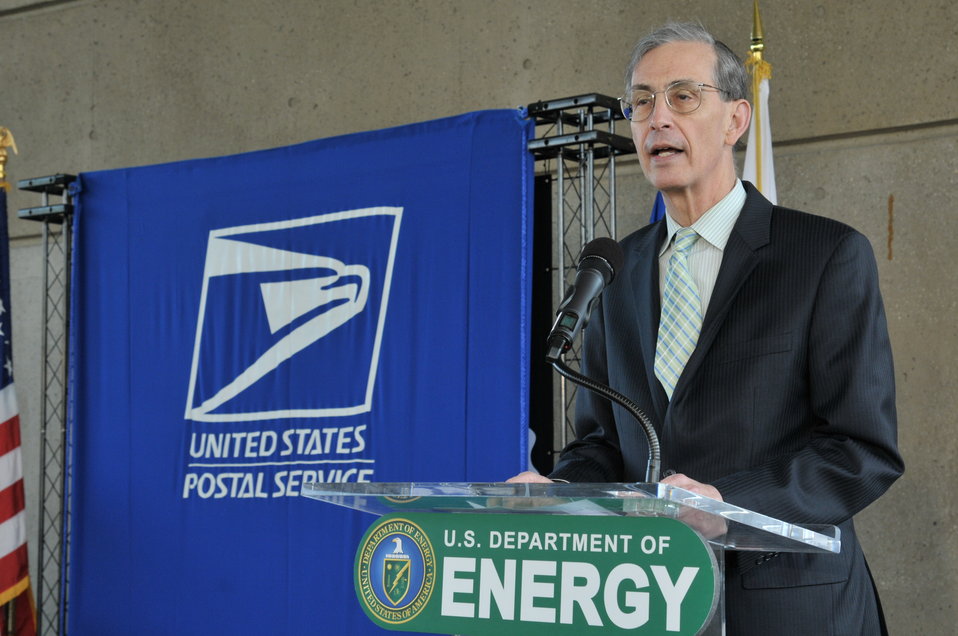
U.S Postal Services introduces a new Global: Sea Surface temperatures forever stamp at the Earth Day program at Department of Energy on April 22, 2014. ( DOE Deputy D.Poneman,T.Day, C.Williams, C.Anderson II, J.Colin Ph.D, Dr. K. Sullivan, K.Tobin Ph.D, W. Gicher Jr)